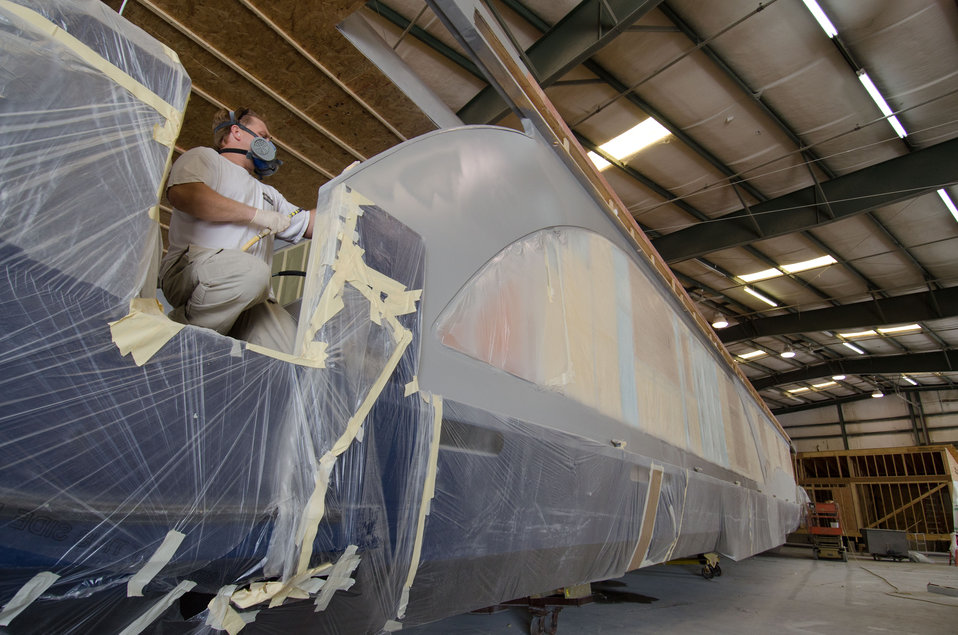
Stardust Industries craftsmen use their expertise in luxury houseboats to help retool and redirect Monticello, Kentucky’s houseboat manufacturing industry on Wednesday, July 13, 2011 The houseboat industry has been decimated because of the struggling economy – by using its facilities and manpower to create low-cost housing that is energy efficient. Rural Development obligated $499,000 in Rural Business Enterprise Grant funds to support this unique endeavor. Up until a few years ago, there were several successful houseboat manufacturers in the four-county area surrounding the city of Somerset. Most have now ceased operation or drastically reduced output, which has led to dramatic, long-term job loss. These new energy efficient homes will be constructed in redesigned, refitted houseboat factories using local workers that have been retrained.